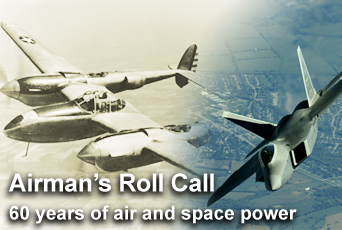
Airman's Roll Call honors 60 years of air, space power

This week's Airman's Roll Call commemorates the past 60 years of the Air Force's supremacy of air and space power.